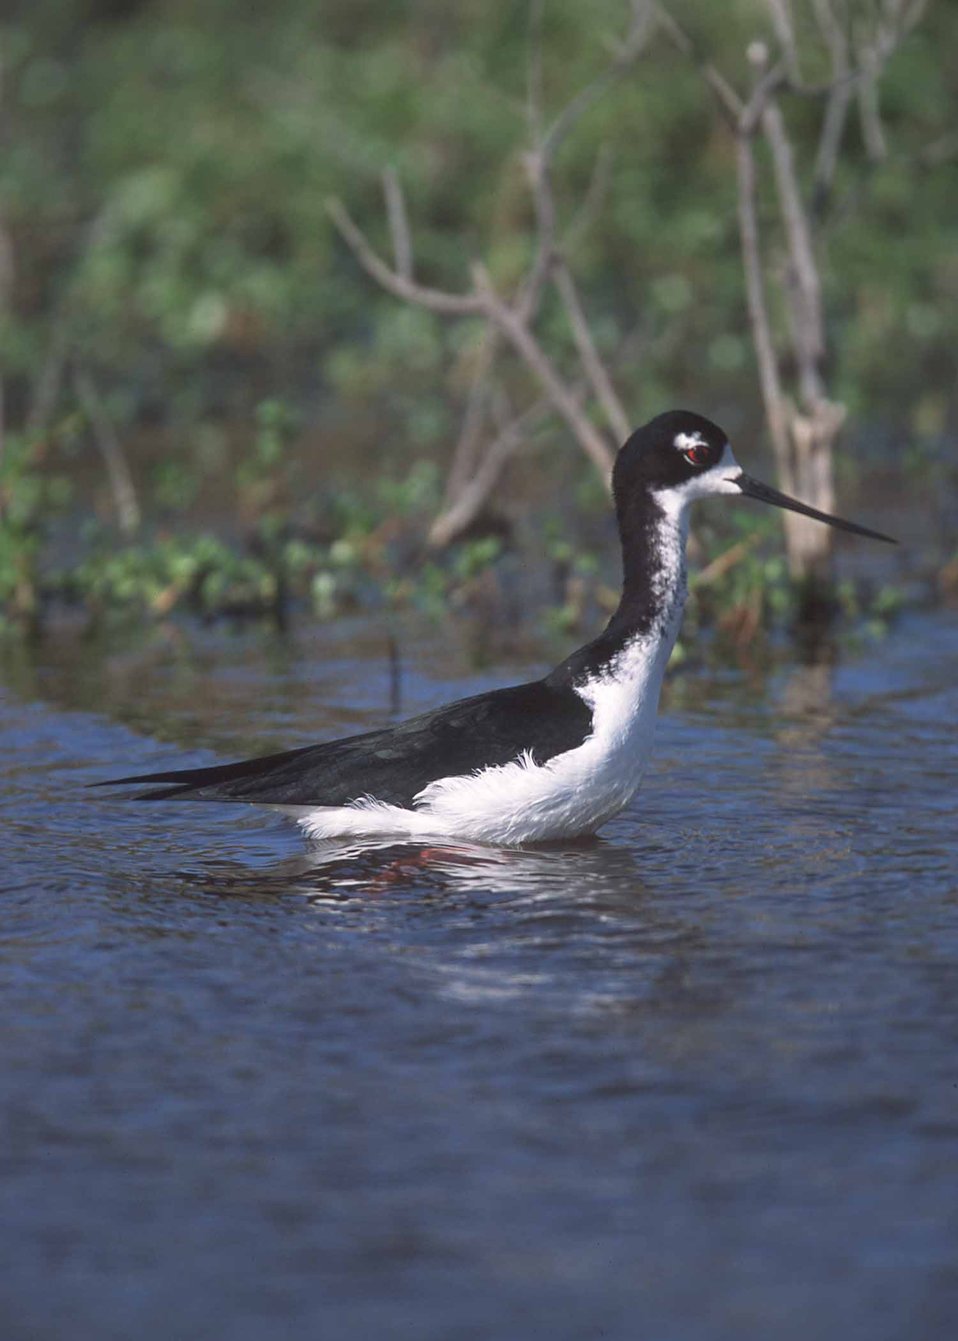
The Black Neck Stilt in Hawaii.